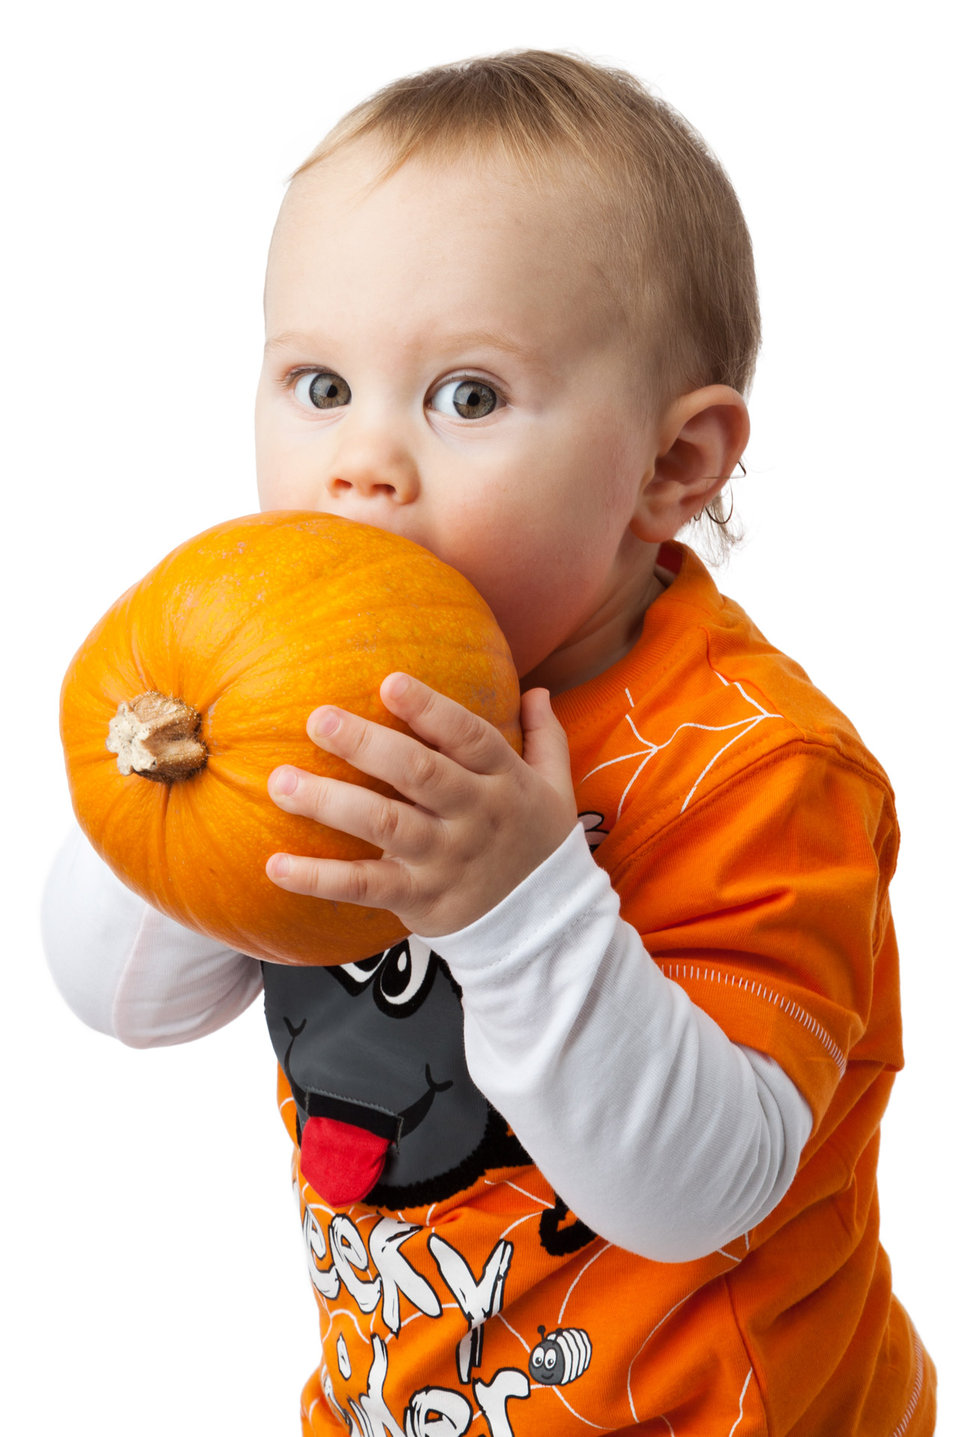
Boy and pumpkin

Halloween boy holding a pumpkin isolated on white background.